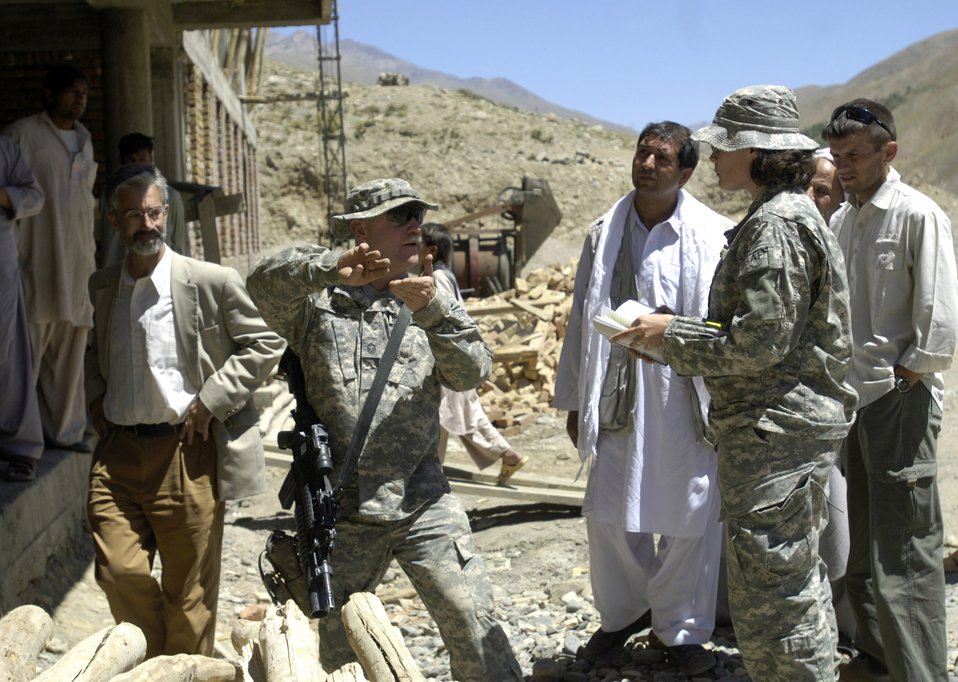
No mountain too high, no bridge too far for Afghan PRT

Panjshir Provincial Reconstruction Team director Ben Lowenthal (left) listens in Aug. 4 as Senior Master Sgt. Roger Smith and Teresa Morales discuss the concrete joints being used at a school construction project in Afghanistan. Ms. Morales, a civil engineer with the U.S. Army Corps of Engineers, is deployed from Portland, Ore. Sergeant Smith is deployed from Langley Air Force Base, Va. Once completed the school will accommodate children from several villages in the province. The children are currently attending classes in makeshift tents overlooking the construction site. The project is one of several being monitored by the PRT in the Paryan district of Panjshir province, Afghanistan.